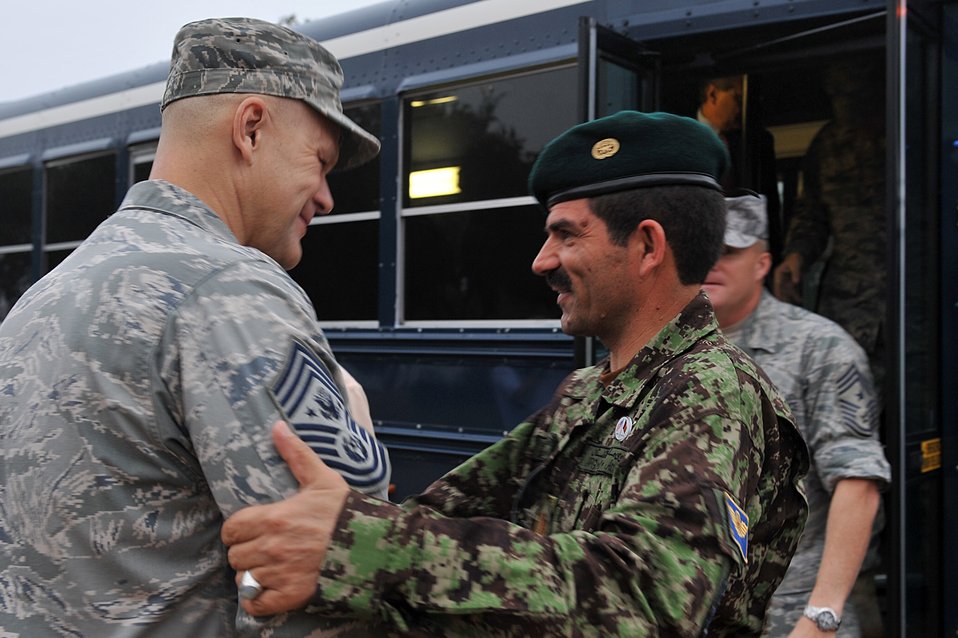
Chief Roy

Chief Master Sgt. of the Air Force James A. Roy greets Eid Mohammad, the command sergeant major of the Afghan air force, Oct. 27, 2010, at Lackland Air Force Base, Texas.